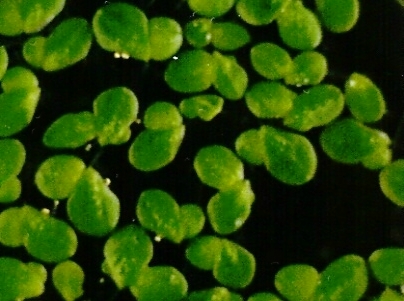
Flowering Lemna gibba.